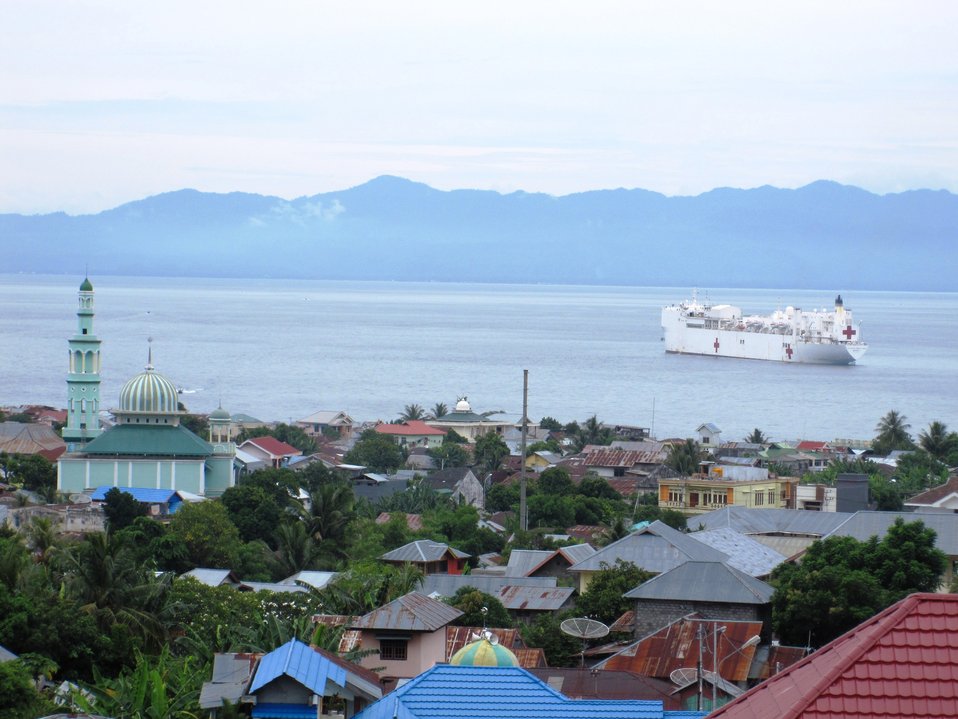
Pacific Partnership 2010 Arrives in Termate, Indonesia

U.S. Foreign Service Liaison Officer Tom Weinz captures a photo as the USNS Mercy for Pacific Partnership 2010 arrives in Termate, Indonesia, on July 19, 2010.